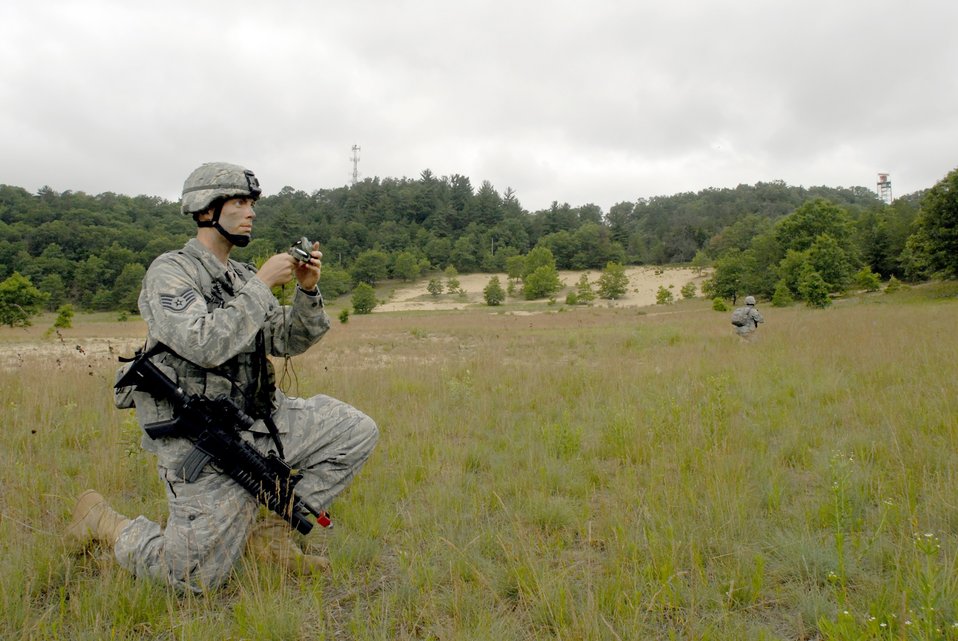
Security forces land navigation exercise

Staff Sgt. Chris Williams checks his compass as part of a land navigation exercise June 13, 2010, at Volk Field Combat Readiness Training Center, Wis. Sergeant Williams is a fire team member with the 115th Security Forces Squadron.